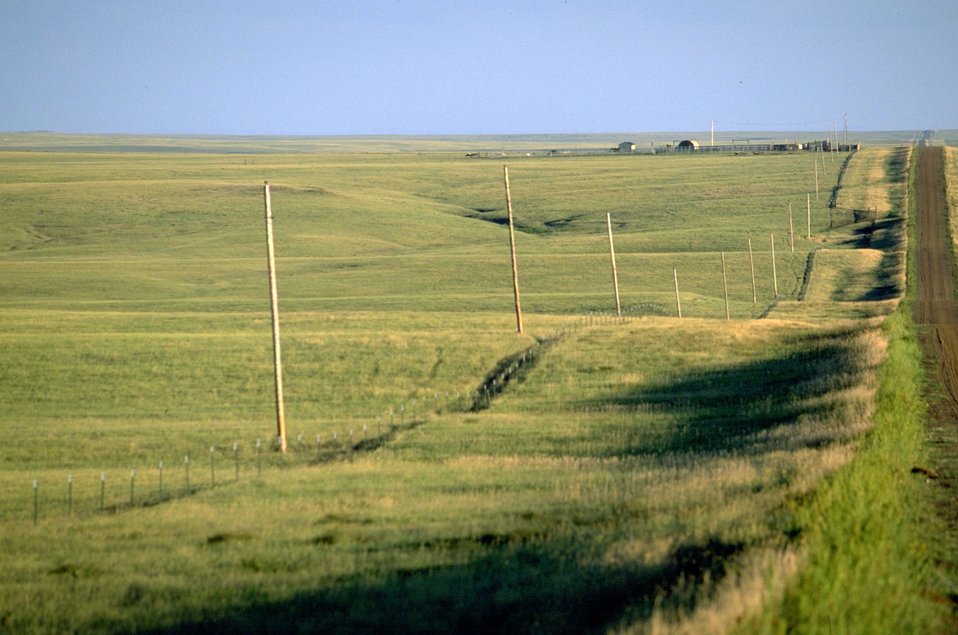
Powerline Right-of-Way 35 miles north of Belle Fourche